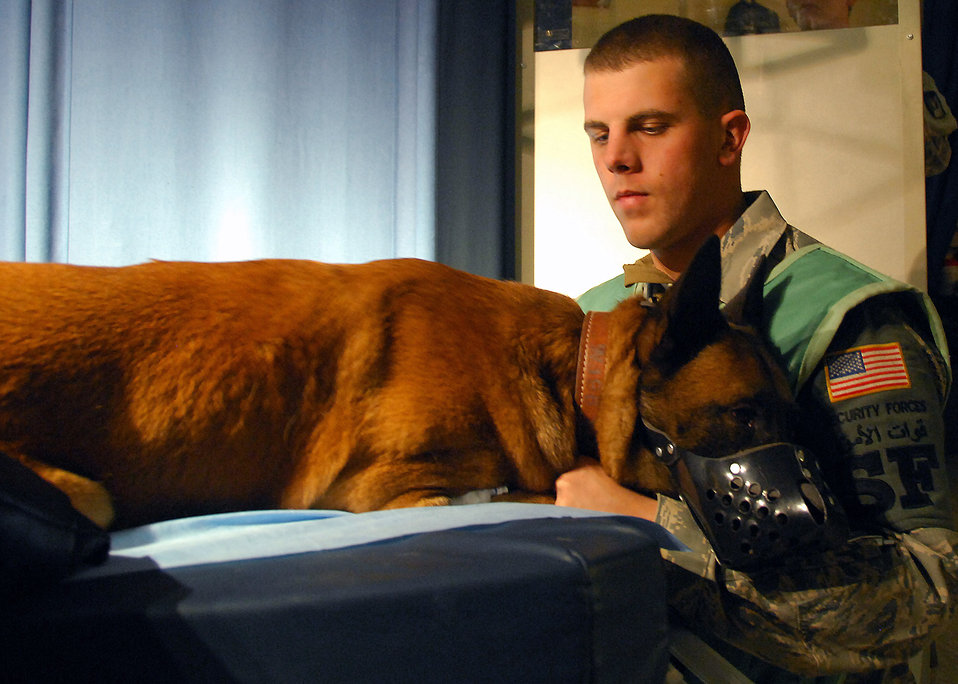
Healing touch

Senior Airman Daren Marshall comforts his K-9, Zack, during an X-ray session Dec. 13 at an air base in Southwest Asia. Zack received an X-ray to see how his pneumonia has cleared since his last visit. Airman Marshall is a 386th Expeditionary Security Forces Squadron military working dog handler assigned to the 386th Expeditionary Security Forces Squadron. He is deployed from F.E. Warren Air Force Base, Wyo.